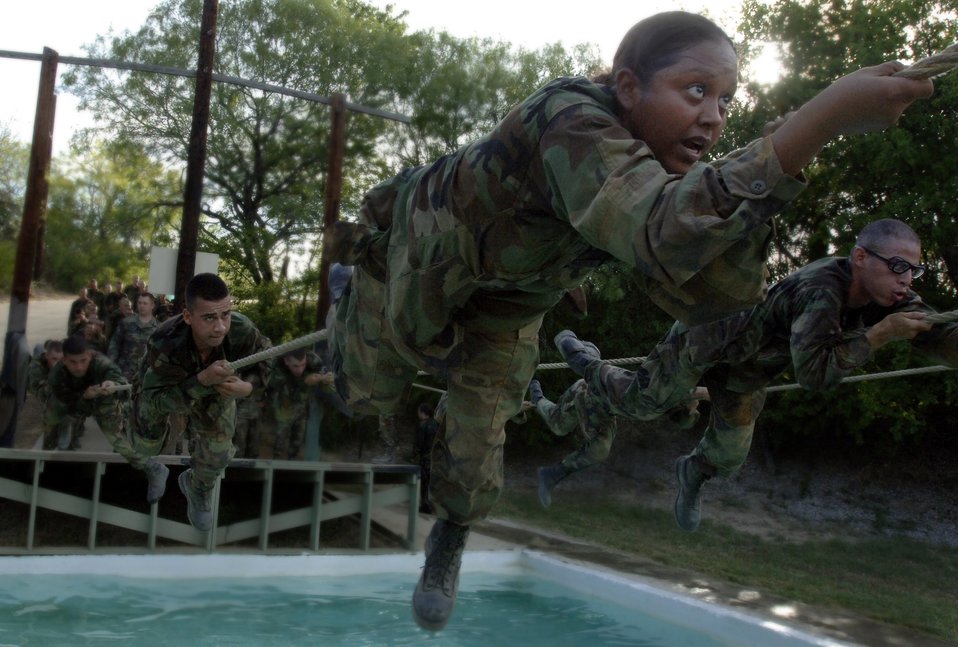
Building confidence

Air Force basic military trainees from the 322nd Training Squadron at Lackland Air Force Base, Texas, run the confidence course, July 25. They began their training June 27.